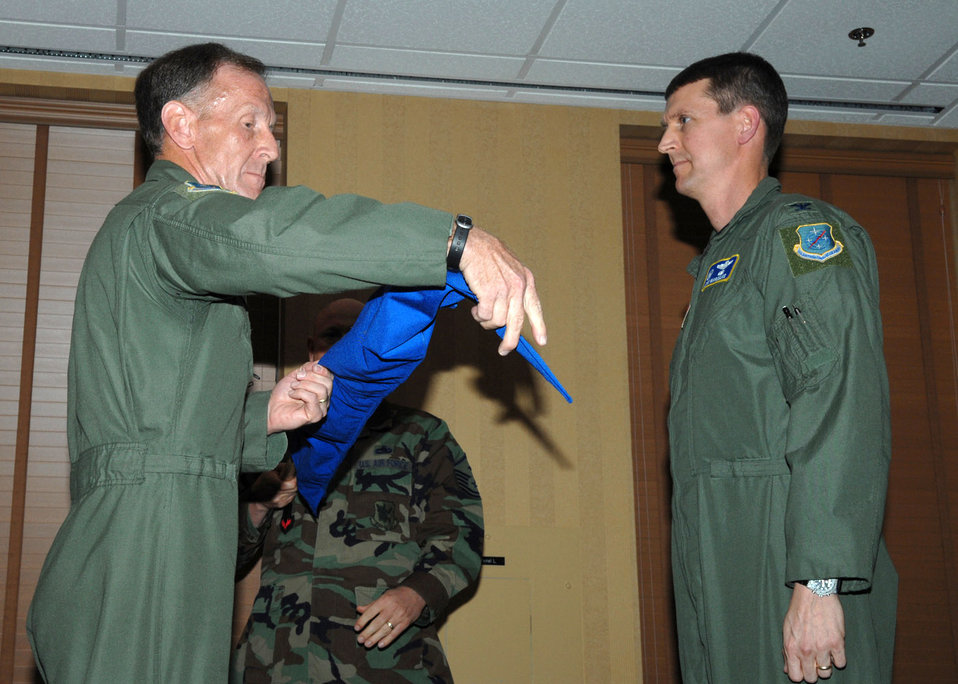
12th Air Force officials unfurl new flags during redesignation

Lt. Gen. Norman R. Seip uncovers the 612th Air and Space Operations Center guidon with Col. John E. Marselus during the 12th Air Force and Air Forces Southern Redesignation Ceremony Feb. 29 at Davis-Monthan Air Force Base, Ariz. General Seip is the AFSOUTH commander, and Colonel Marselus is the 612th Air and Space Operations Center commander.